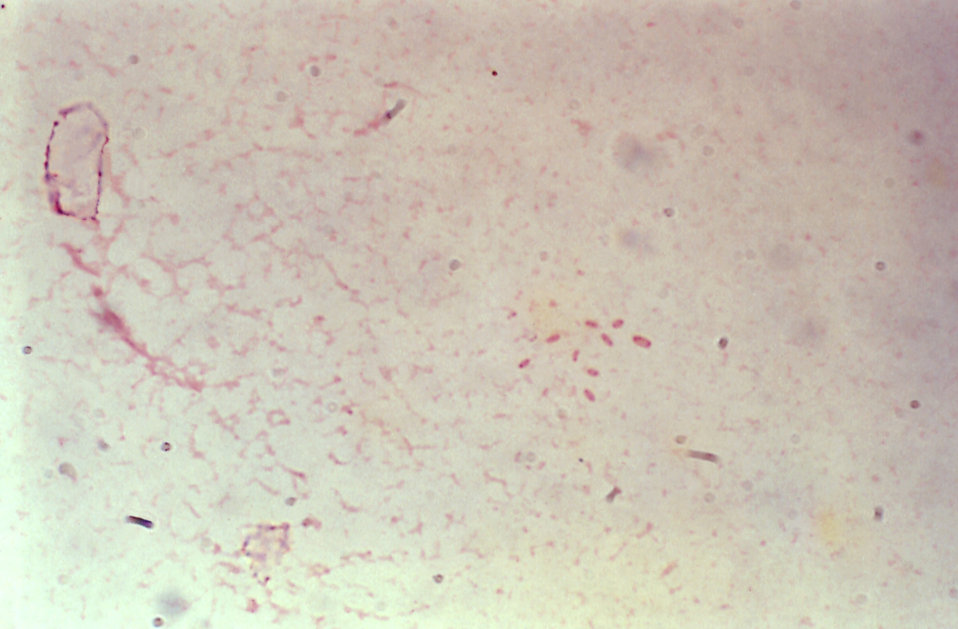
This 1975 photomicrograph depicted what was a cerebrospinal fluid (CSF) specimen, which revealed a false-positive reading, due to what was determined to be contaminants from the lumbar puncture instrument tray.